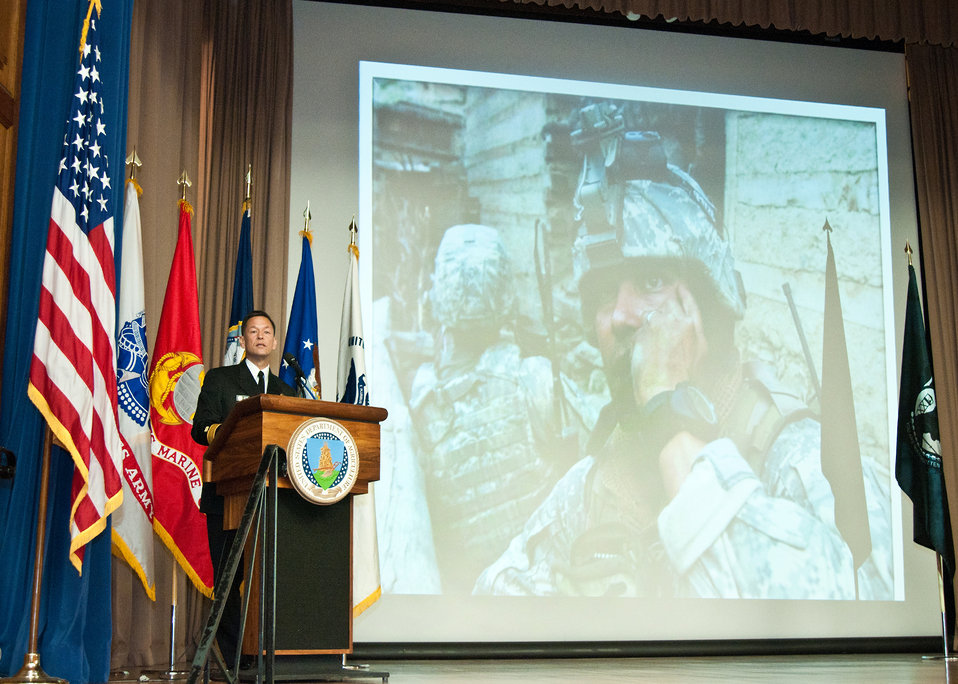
Rear Admiral David Boone, Director, Shore Readiness (OPNAV N46) Deputy Chief of Naval Operations, U.S. Navy, addresses employees at the United States Department of Agriculture Veteran’s Day celebration in Washington, DC, Thursday, November 10, 2011. The theme of Admiral Boone’s speech was, “Trust.” Trust in your brothers-in-arms and superiors in taking care of each other and trust that the veteran’s families are secure.